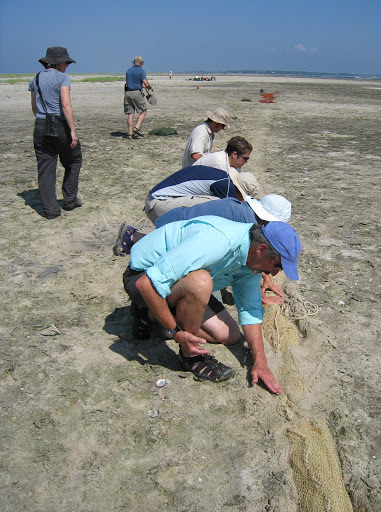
Net

The trapping crew finishes camouflaging a net with a thin layer of sand, so it blends in perfectly with the habitat.